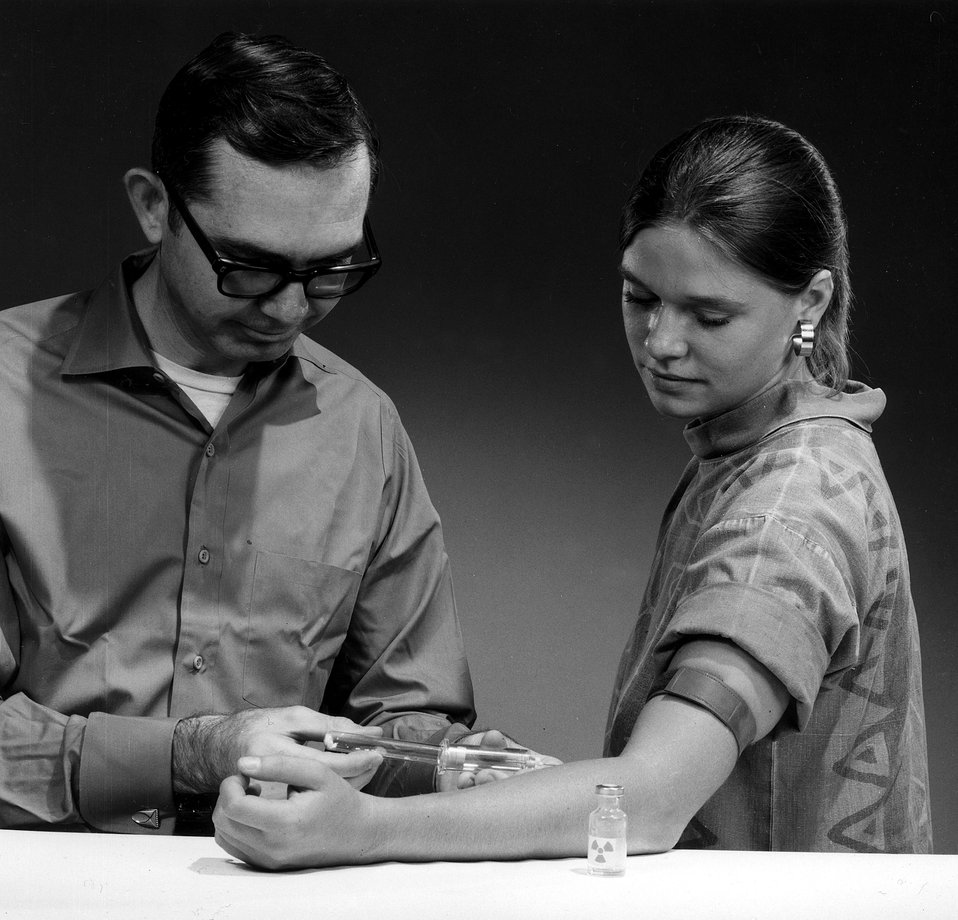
A diagnostic kit for labeling a patient's own red blood cells has been developed at Brookhaven. It is expected to contribute to diagnosis of vascular disorders, including heart, spleen, and blood measurements.